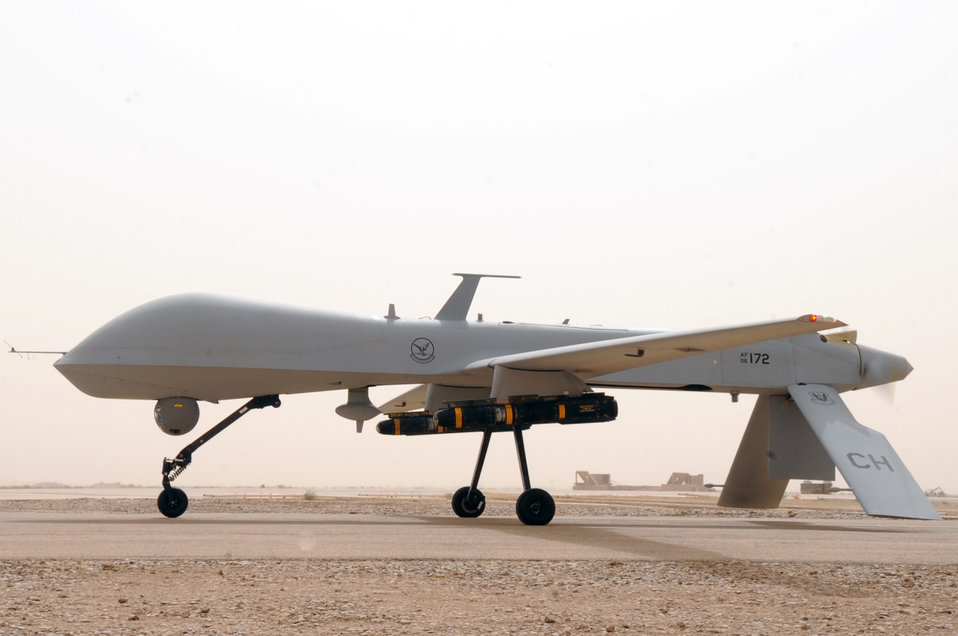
MQ-1B Predator

A MQ-1B Predator from the 361st Expeditionary Reconnaissance Squadron takes off in support of Operation Iraqi Freedom here July 9, 2008. Through the use of advanced capabilities, focused doctrine and detailed training the predator provides integrated and synchronized close air combat operations, to include intelligence, surveillance and reconnaissance.